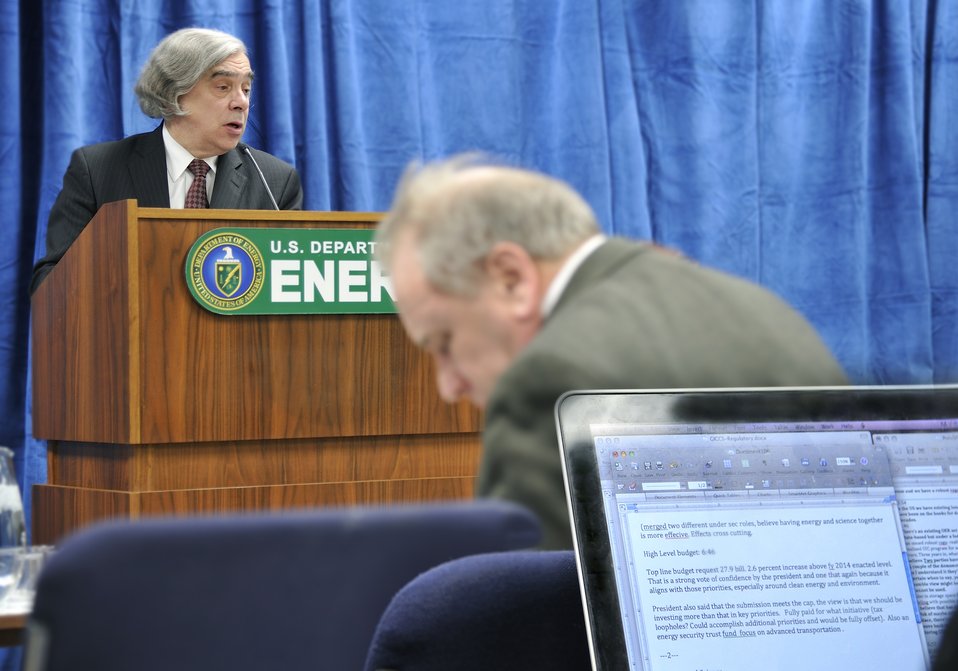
2852

SECRETARY E. MONIZ - 2014 DOE BUDGET ROLL OUT ON MARCH 4, 2014